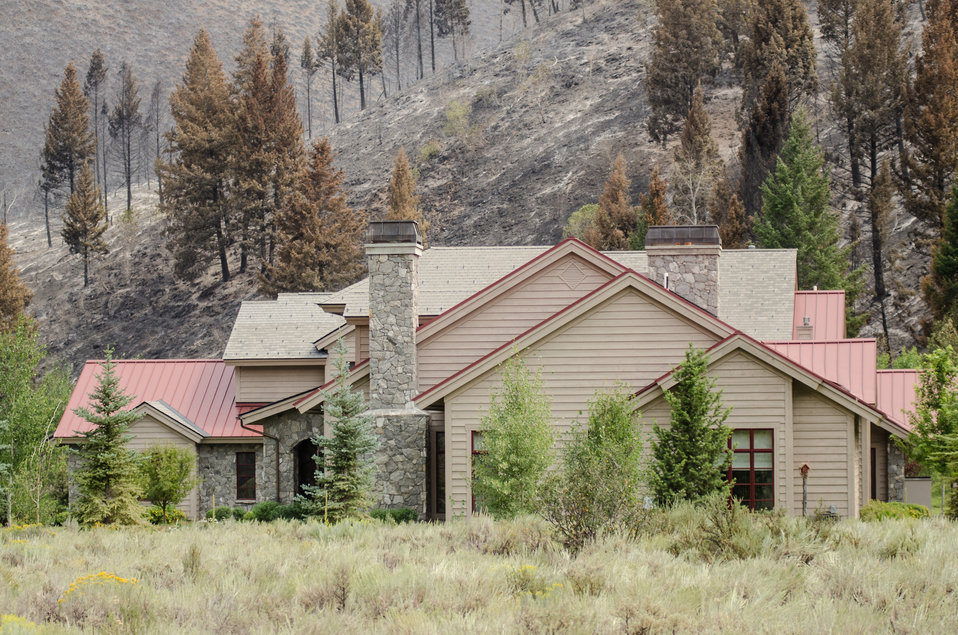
Thanks to the efforts of Wildland Firefighters, support crews and other first responders, homes and residential communities were (with few exception) saved from major damage, from the Beaver Creek Fire, near Hailey, ID, in the interface of U.S. Department of Agriculture (USDA) Forest Service (FS) and Sawtooth National Forest and Bureau of Land Management (BLM) lands, on Wednesday, Aug 21, 2013. In this community, major sections of hillside were charred, some suffered burnt trees, grass lands and fences.